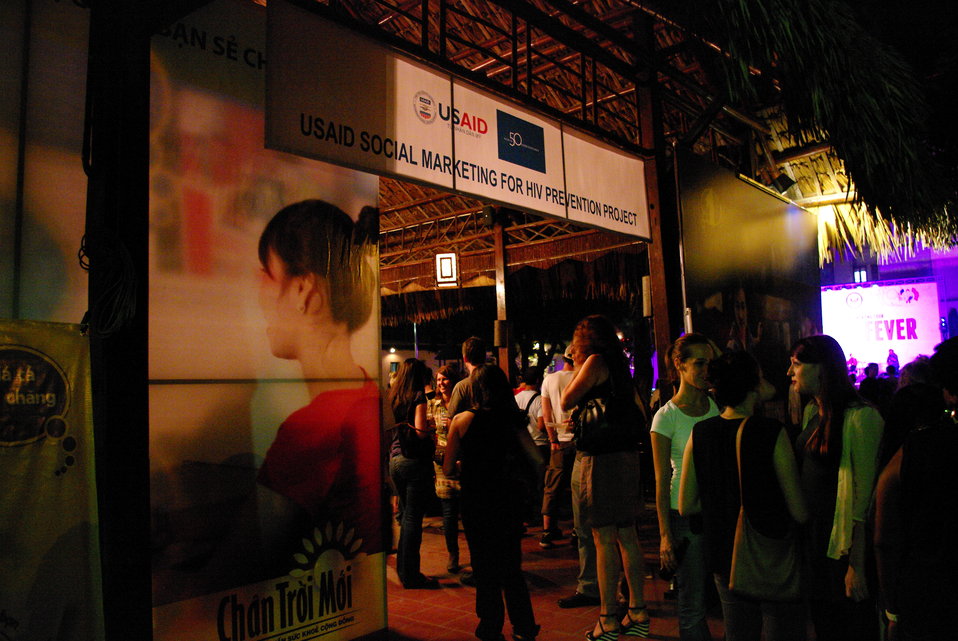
PEPFAR, U.S. Embassy Host Dengue Fever Concert in Hanoi